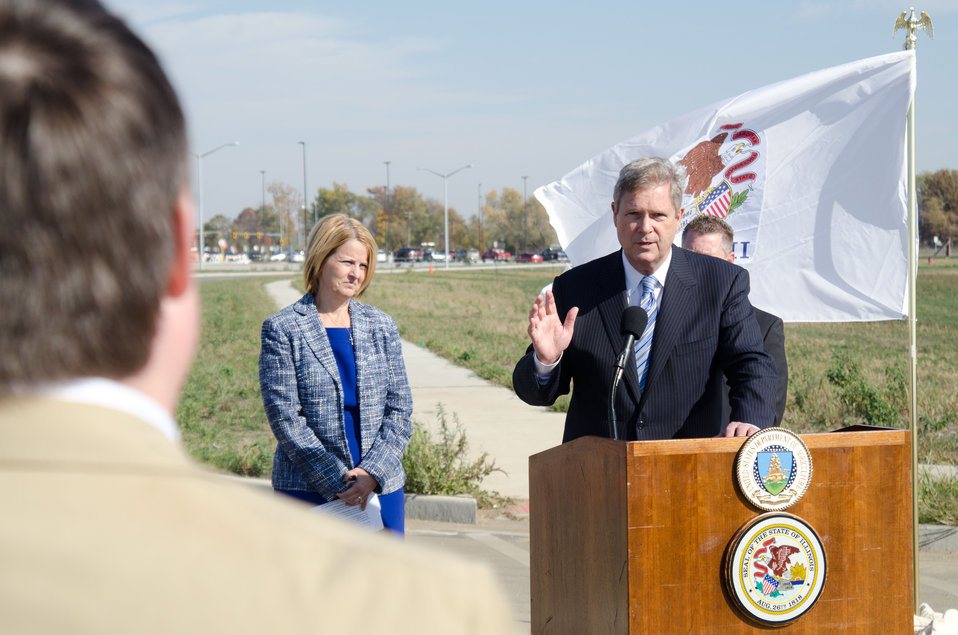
U.S. Department of Agriculture Secretary Tom Vilsack (at podium), Illinois Department of Transportation Acting Secretary of Transportation Ann Schneider (center) and Sangamon County Recorder of Deeds (left) visited a recently completed transportation project that extended the existing MacArthur Boulevard and new interchange with Interstate 72, that brought new businesses and 500 new jobs to Springfield, IL on November 2, 2011. Agriculture Secretary Tom Vilsack discussed the Administration's strategy to strengthen the U.S. economy and to highlight what passage of the American Jobs Act will mean for Illinois. 'The American Jobs Act provides common-sense steps we can take right now to put more people back to work and put more money in the pockets of working Americans, without adding a dime to the deficit,' said Secretary Vilsack. 'In Illinois, this Act will provide a tax cut for over 260,000 businesses, support the jobs of 14,500 teachers and first responders and immediately provide a job for over 20,700 construction workers through infrastructure improvements. A typical household in Illinois will receive a tax cut of around $1,640.'